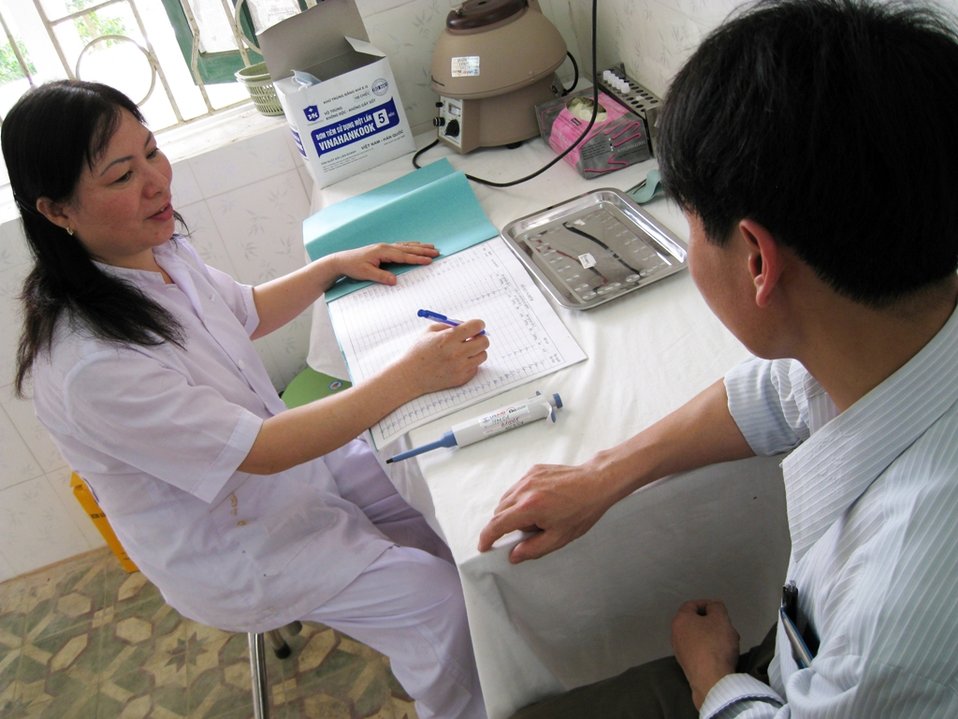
USAID supports health officials in HIV testing and counselling in Vietnam

Nguyen Thi Chien interviews a client at a USAID-supported HIV testing and counselling center near Hanoi.